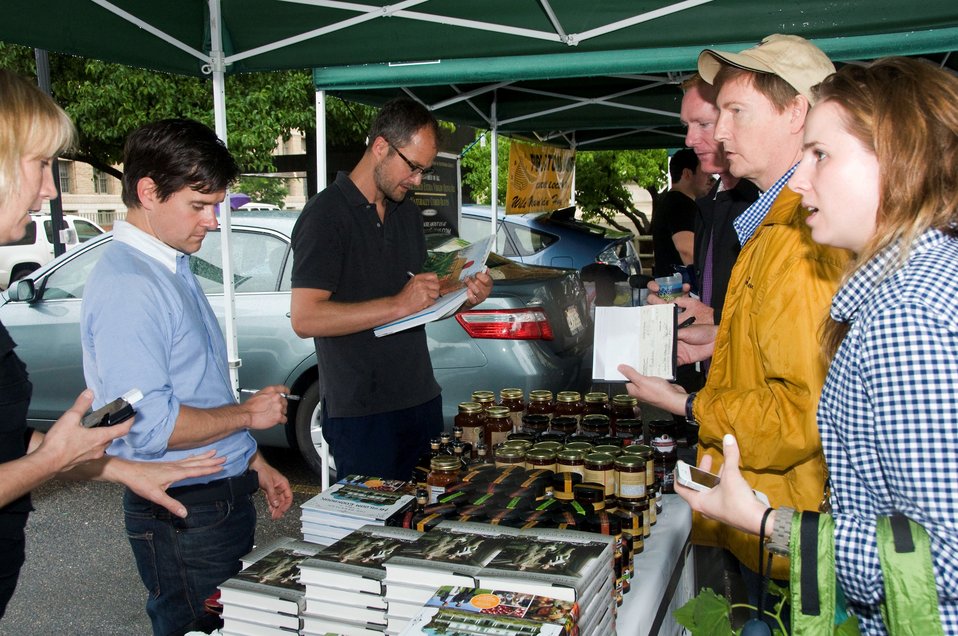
Beekman Boys signing books

The Beekman boys talk with customers at the USDA Farmers Market and sign copies of their books.